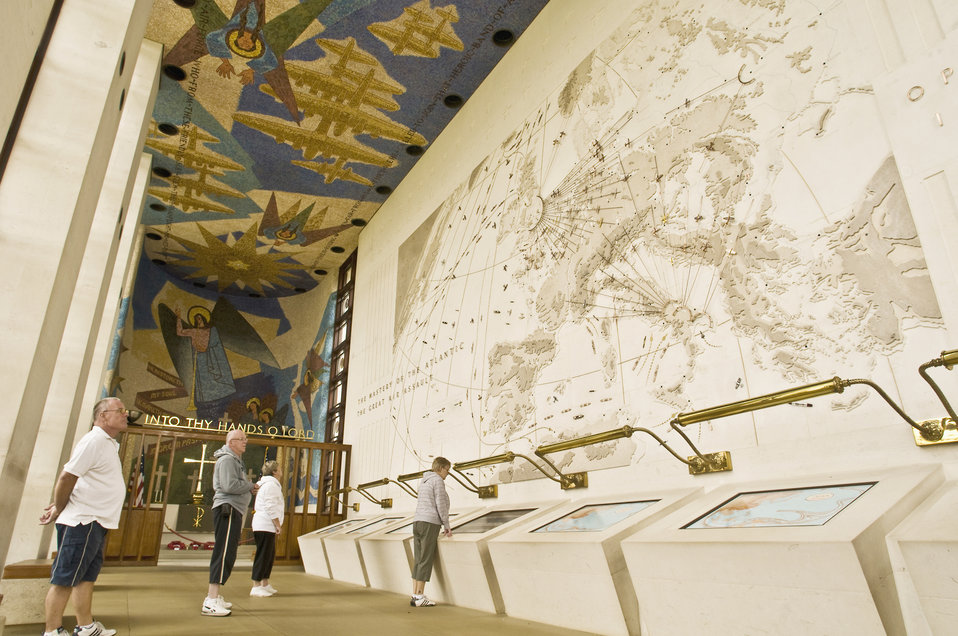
'Resolve of our Nation' found at American Cemetery

Visitors look around the monument and chapel at the Cambridge American Cemetery and Memorial in Cambridge, England. The monument includes two military maps, a mosaic ceiling memorial to the Airmen who died in World War II and military decorations.